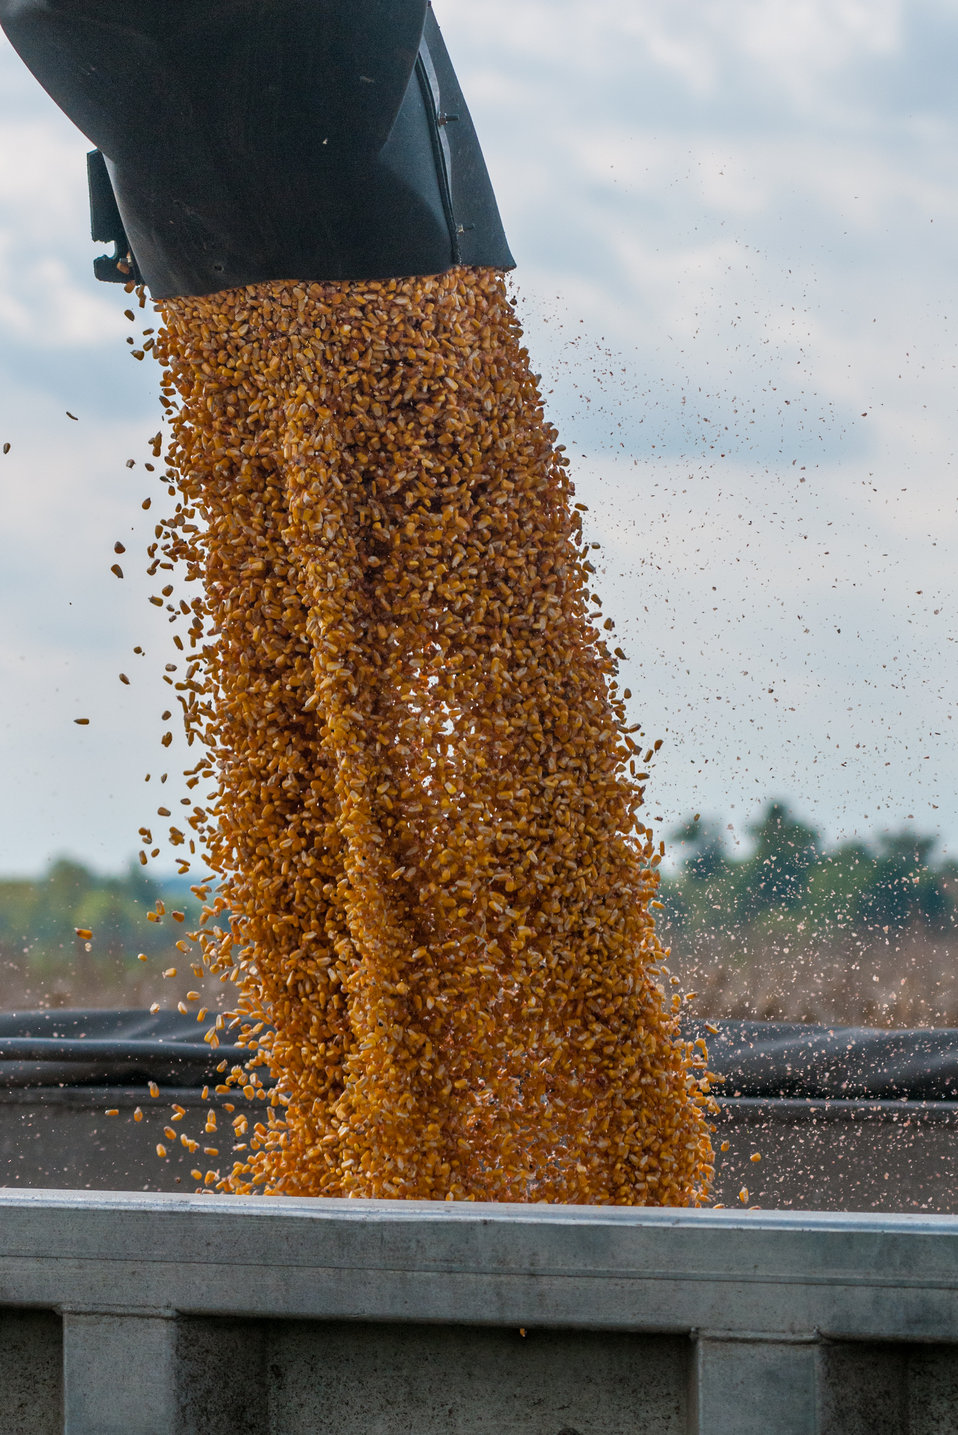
Corn is transferred from corn harvester to trailer, at the John N. Mills & Sons farm; a family owned business located in the Hanover and King William Counties Virginia, on Friday, Sept. 20, 2013. Pleasant Level Farm was the original farm from a Land Grant from King George III of England to Nicholas Mills in 1725. The original acreage has never left the Mills family name and continues to be farmed by the family.
Now the farm covers 5,744 acres that produce corn, wheat, soybeans, barley, hay, timber, and pastures a large herd of beef cattle. They have been using conservation and stewardship practices since the 1960s. Some of the efficient practices include no-till planting and cover crops to reduce soil erosion and prevent the leaching of nutrients into ground water, as well as livestock stream exclusion. The farm has several conservation easements that aids in the preservation and restoration of wetlands and waterways. For information about the U.S. Department of Agriculture (USDA), please go to www.usda.gov.